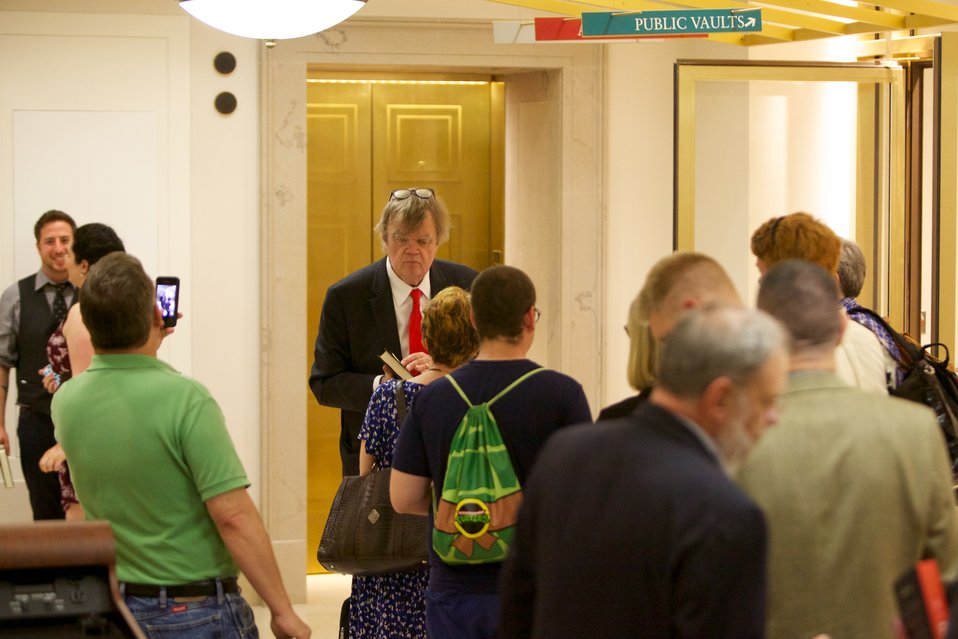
The Keillor Reader